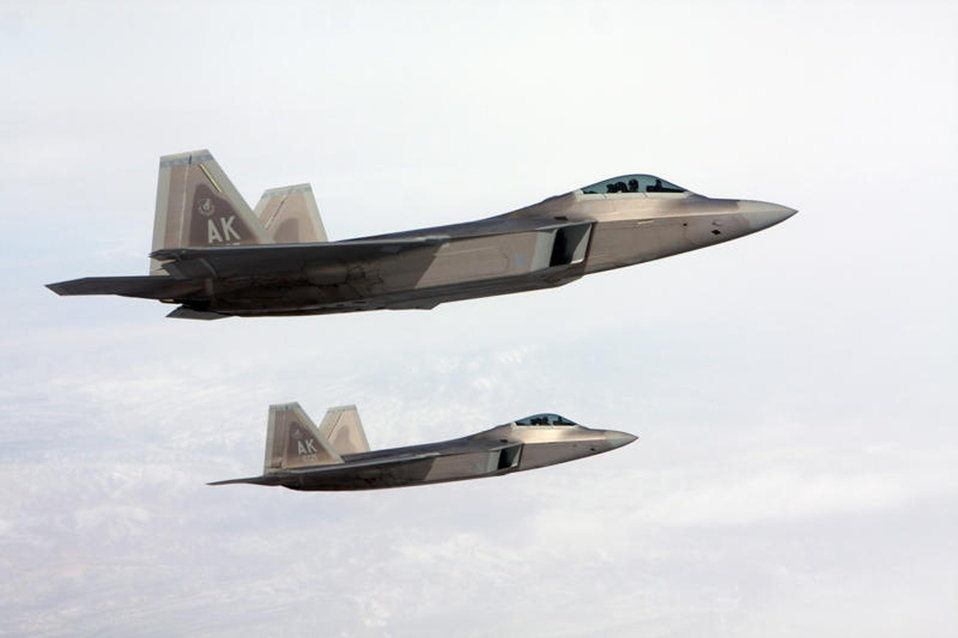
Raptors reign at Red Flag

Two F-22 Raptors from Elmendorf Air Force Base, Alaska, fly over the Nevada Test and Training Range Feb. 2, 2010, during Red Flag at Nellis AFB, Nev. Red Flag is a realistic combat training exercise involving the air forces of the United States and its allies. The exercise is conducted on the 15,000-square-mile range north of Las Vegas.